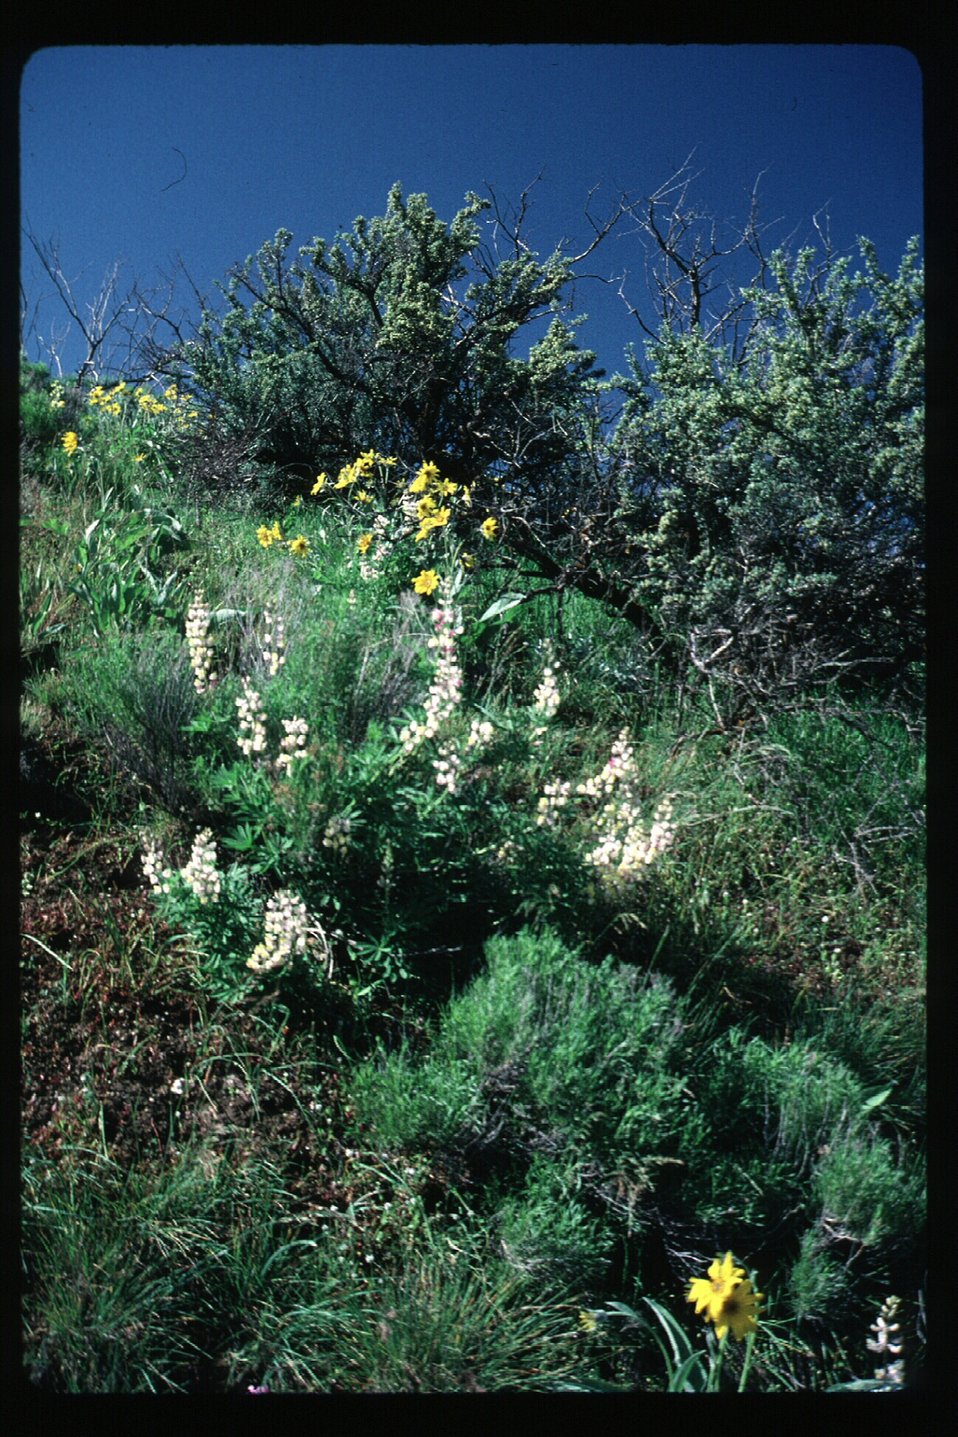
Wildflowers Scenic LSRD Lower Snake River District